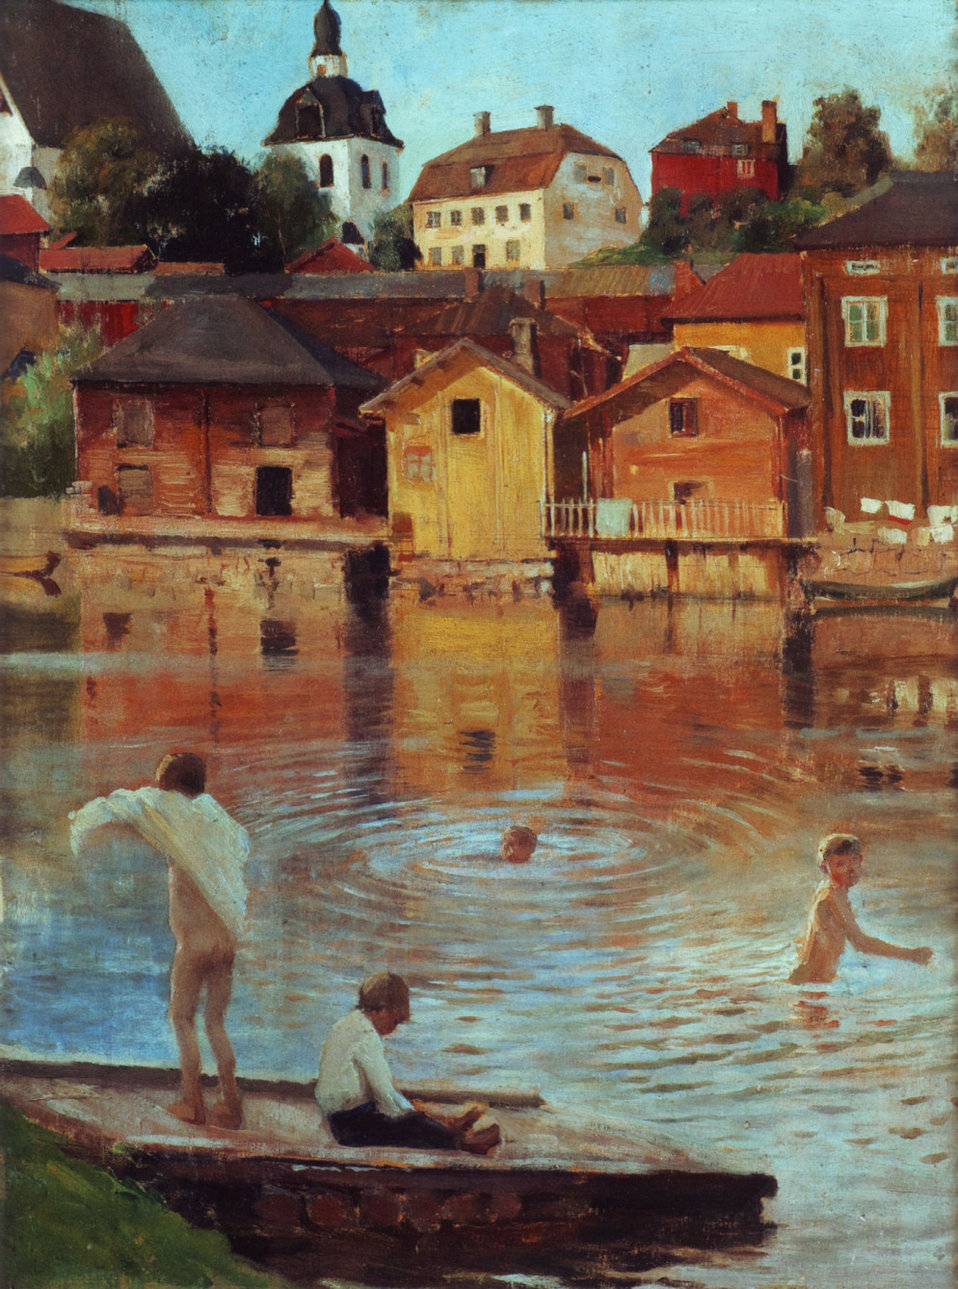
Albert Edelfelt - Porvoonjoessa Uivia Poikia